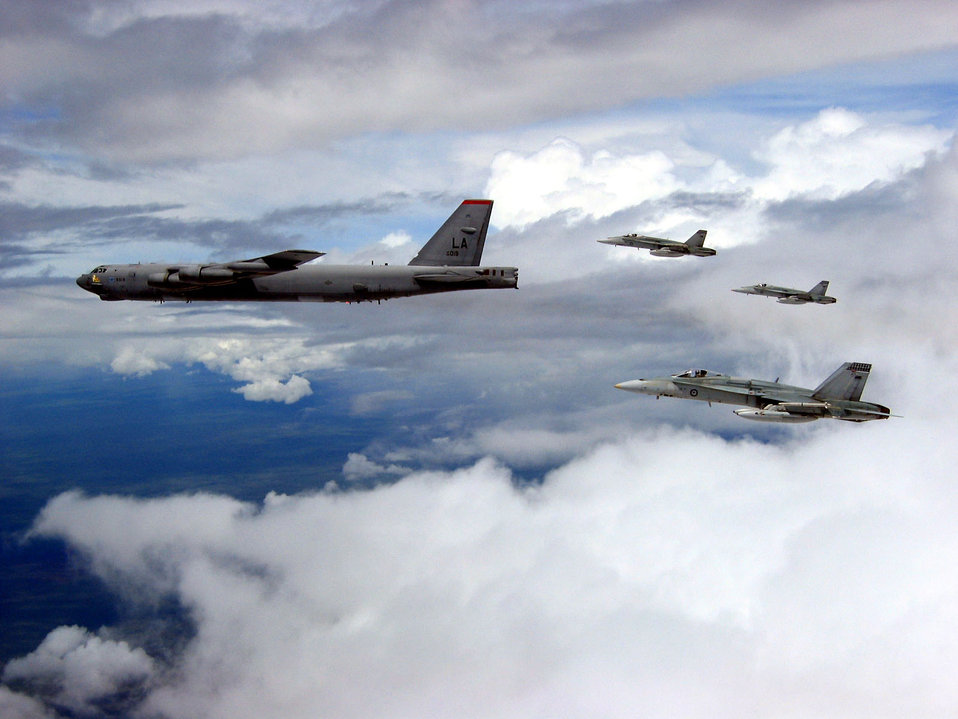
B-52s participate in Green Lightning, Australian air show

A B-52 Stratofortress from Andersen Air Force Base, Guam, is escorted by Hornets from the Royal Australian Air Force March 21 en route to the Delamere Bombing Range as part of the Green Lightning exercise that ended last week in Australia. The Delamere Bombing Range facility in the Northern Territory is a world class military exercise site that allows many skills to be honed and tested.